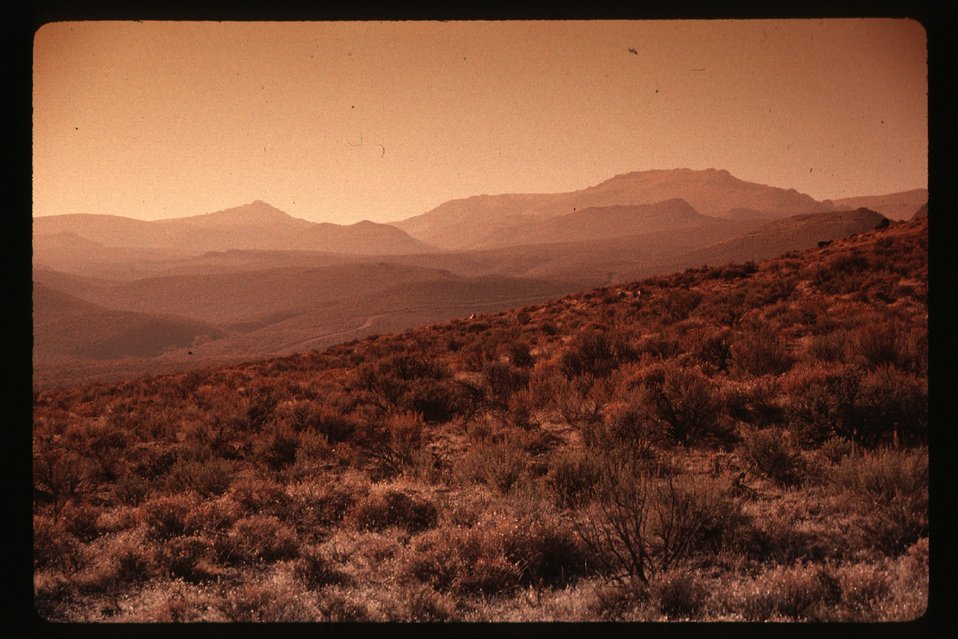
Wild Horse and Burro Adoption Program Range Four Rivers Field Office LSRD Lower Snake River District